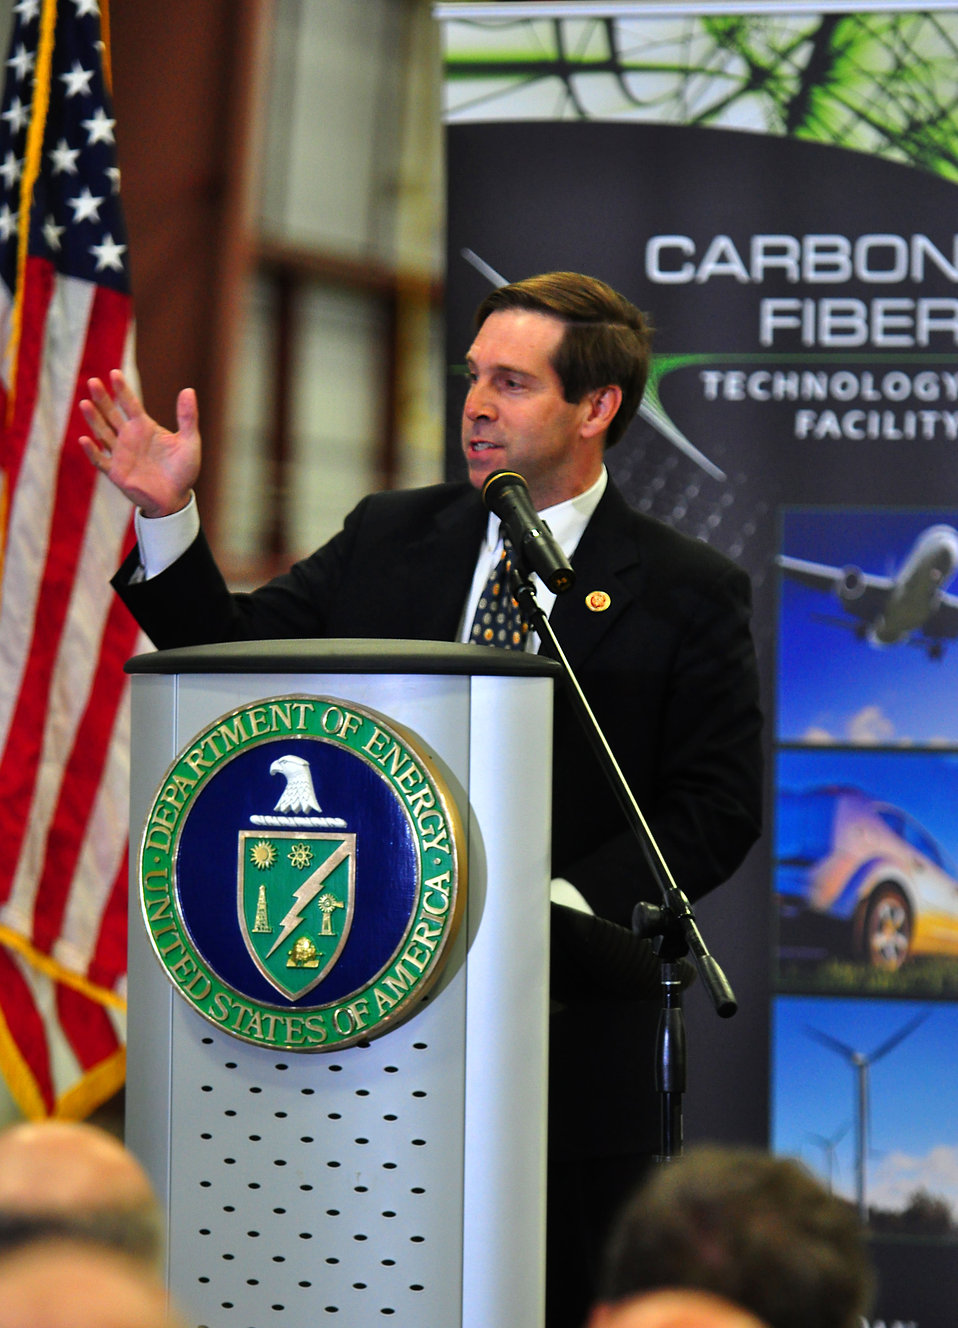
Carbon Fiber Technology Facilty Open House Oak Ridge Tennessee

13-025 DOE photo Lynn Freeny
Tennessee Congressman Chuck Fleischmann